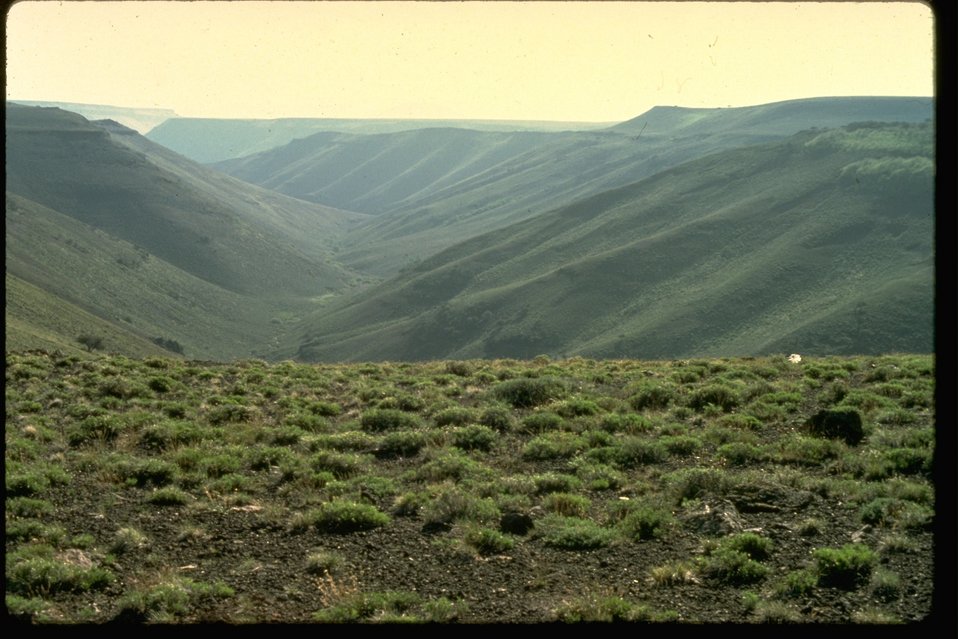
15 Mile Creek, Cotttonwood Creek, Horse Creek, and Trout Creek in the 15 Mile Creek Wilderness Study Area. WSA OR 3-156.